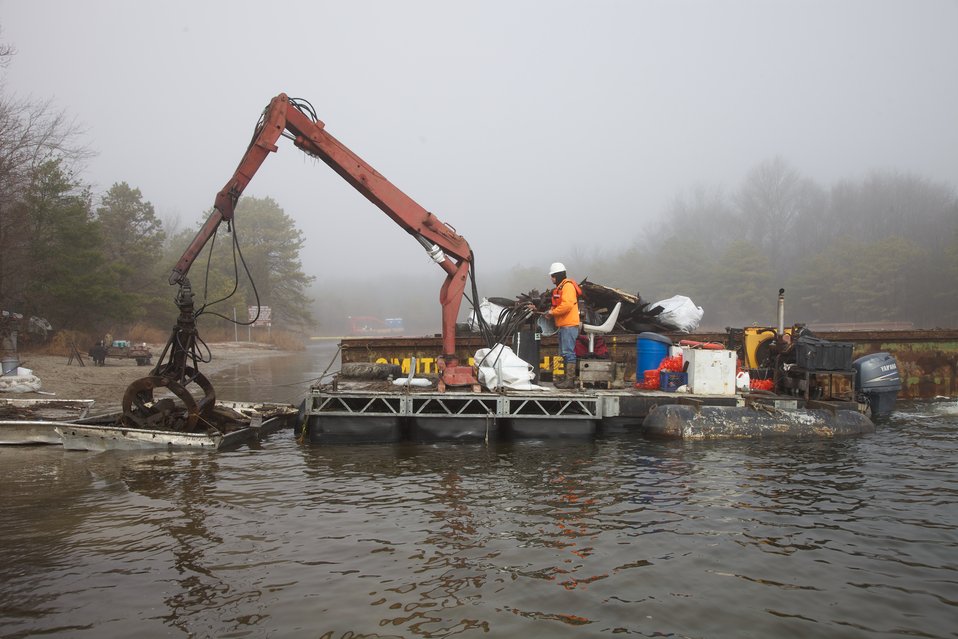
Forsythe NWR debris cleanup

Water-based debris removal at E.B. Forsythe National Wildlife Refuge.